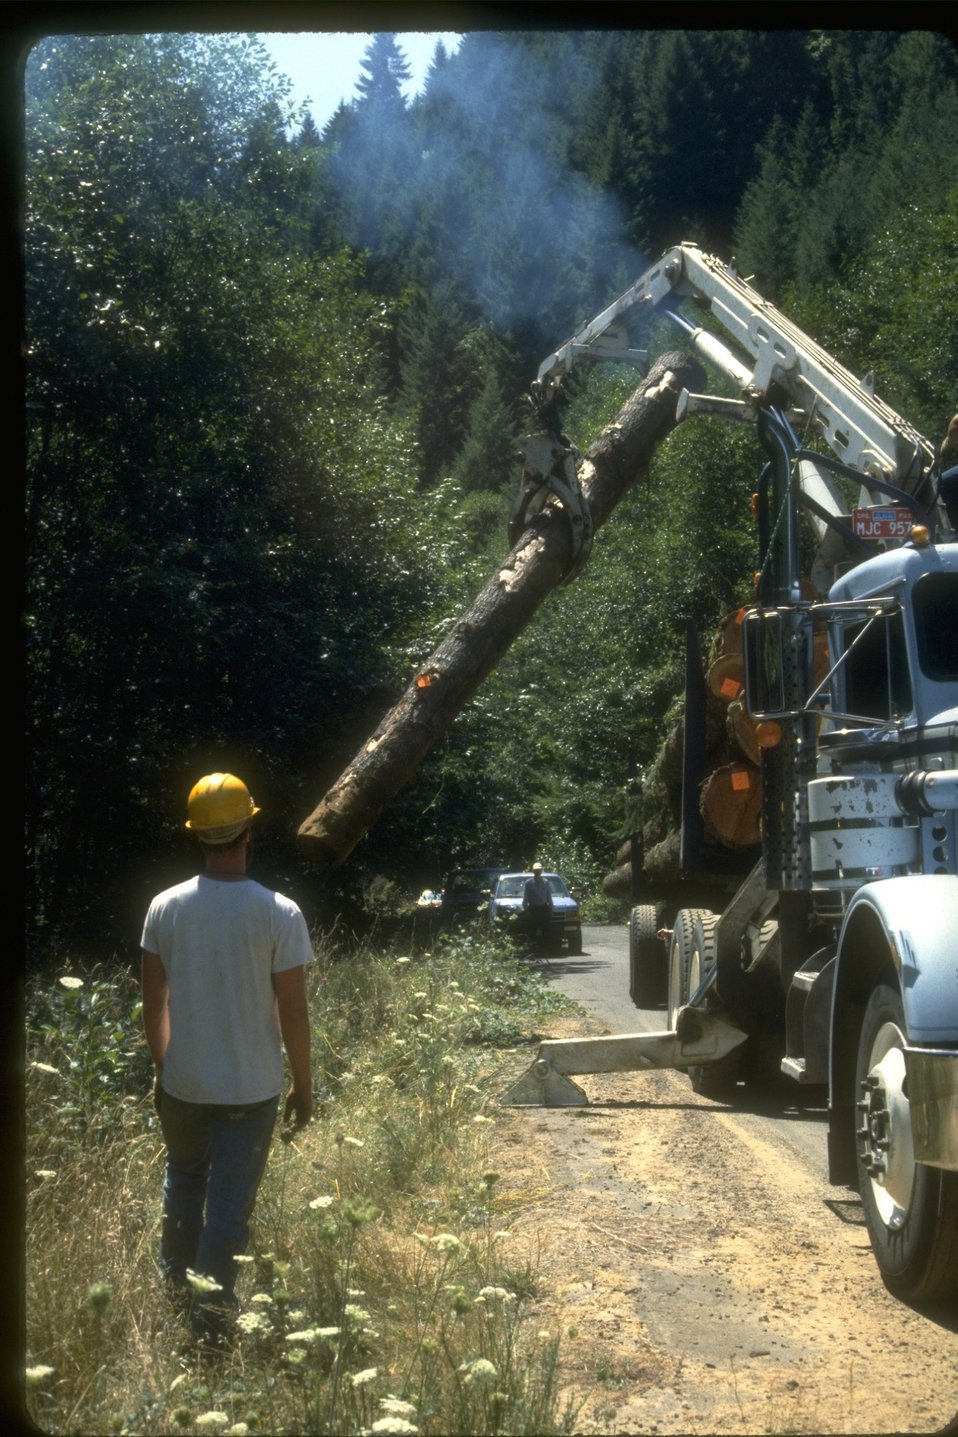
Unloading logs to be used to build V-dams. (Fisheries)